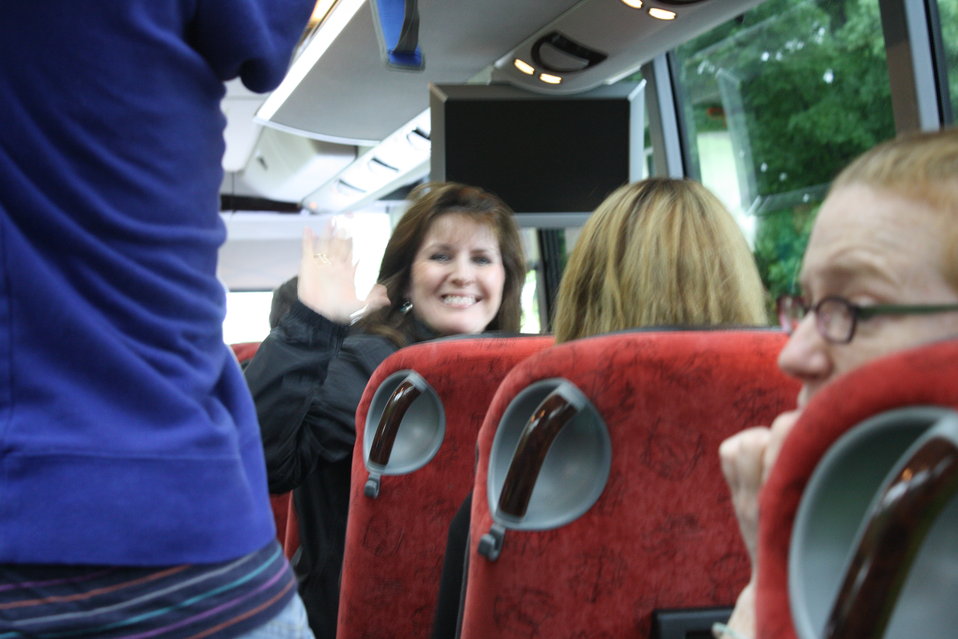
Nashua National Fish Hatchery welcomes regional office employees

Bus ride home!